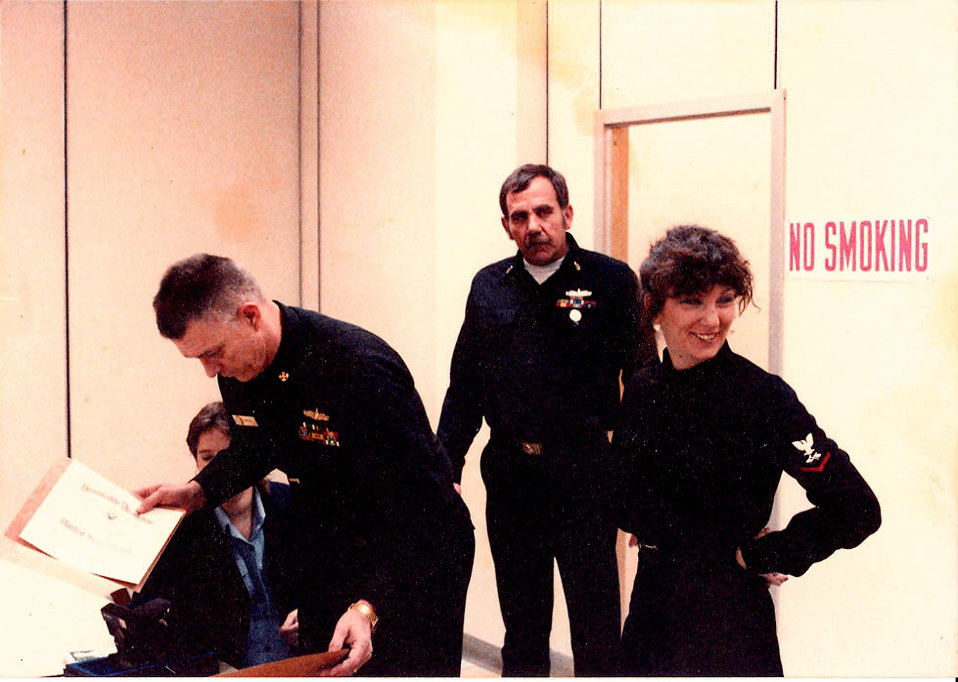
Patricia Compton

Office Assistant Patricia Compton is a 12-year veteran of the Navy. The picture was taken shortly after she transferred for a tour of duty in Rota, Spain. She is currently assigned to the San Francisco Bay NWR Complex.